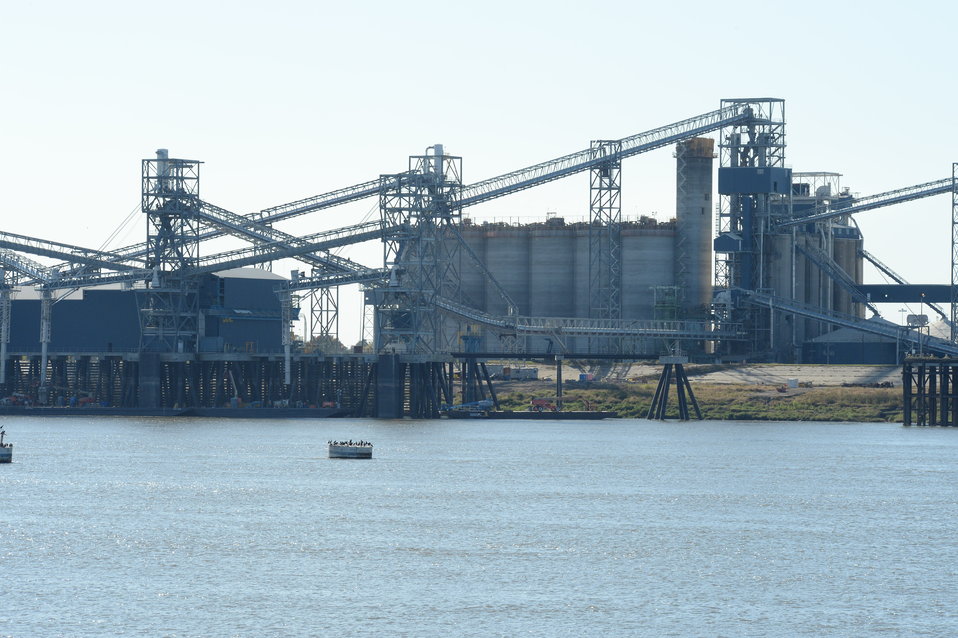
Grain elevators on the Mississippi River near the port of New Orleans, LA on Tuesday, Nov. 19, 2013.